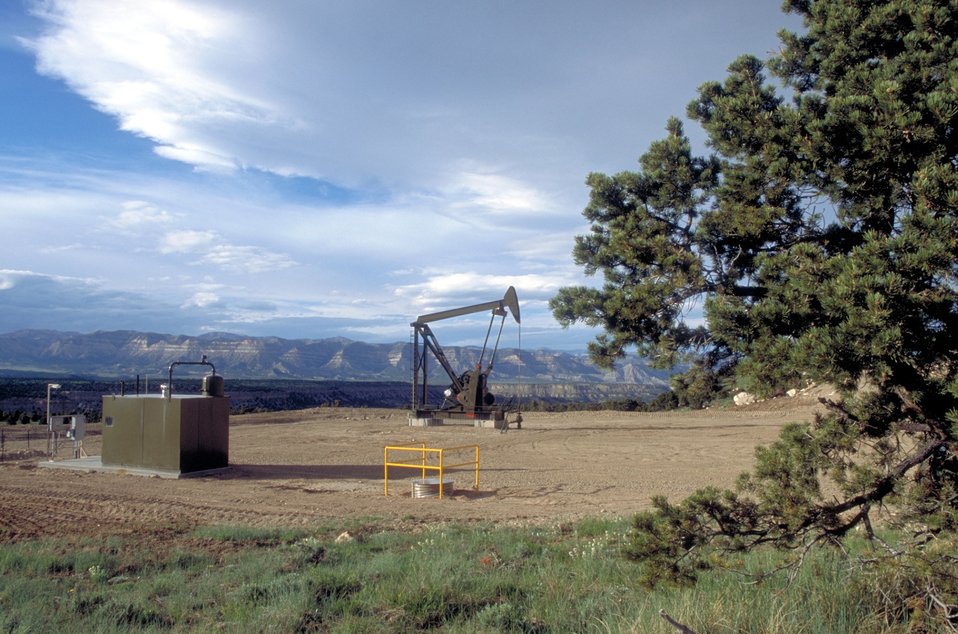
Pump unit producing coal bed methane near Price, Utah.